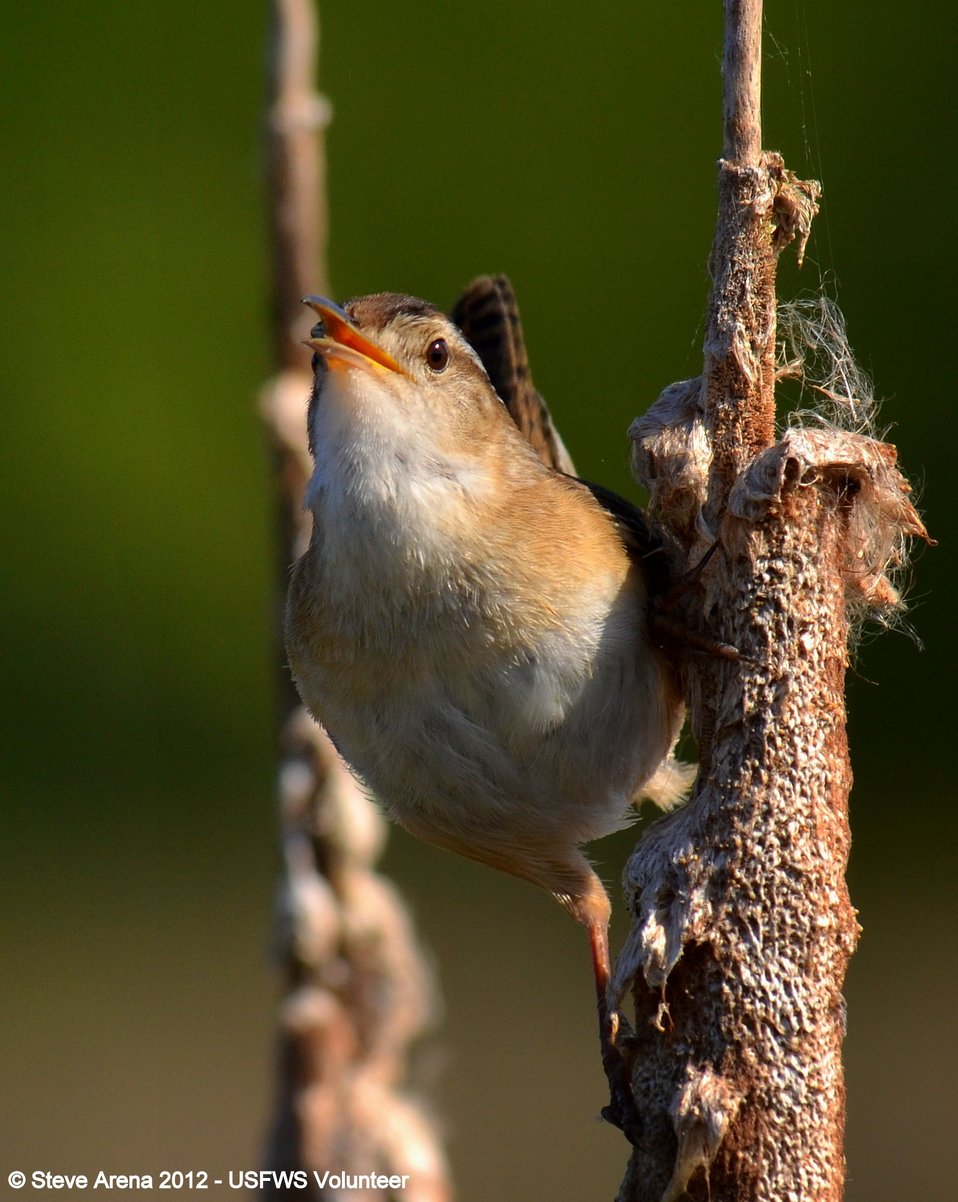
Marsh Wren (Cistothorus palustris) Great Meadows NWR, Concord, MA

Marsh Wren Great Meadows NWR, Concord, MA

Credit: Steve Arena/USFWS

18 May 2012